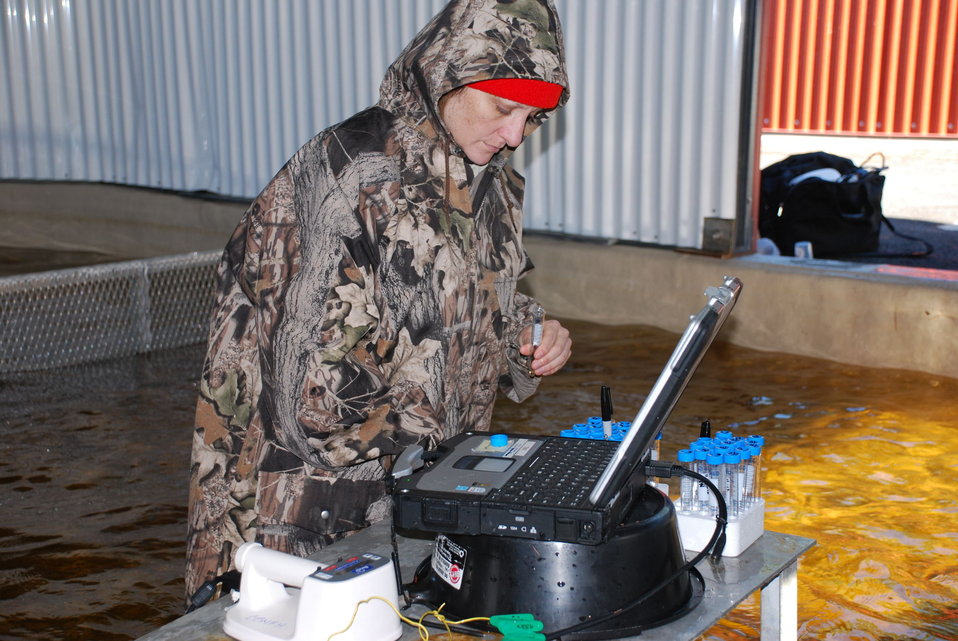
Accessing genome database